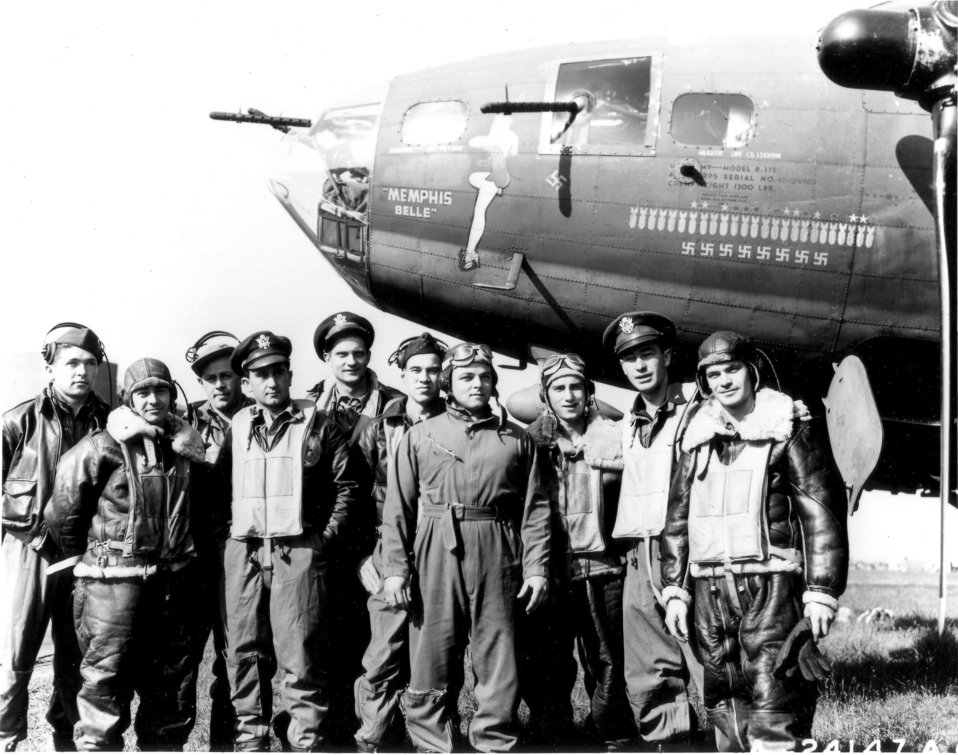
Memphis Belle crew

1940's -- The crew of the B-17 Flying Fortress